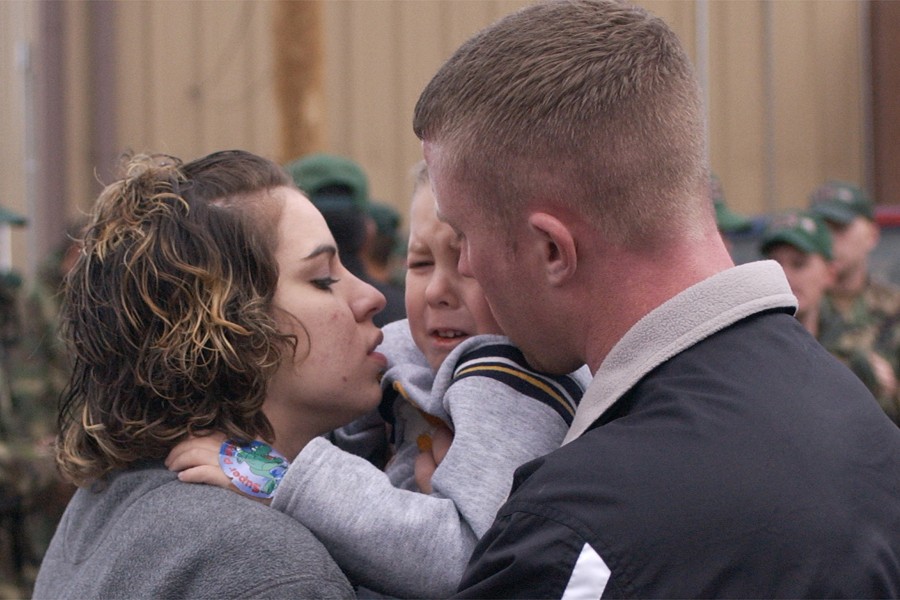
Uncle Sam thanks you

HOLLOMAN AIR FORCE BASE, N.M. (AFPN) -- Airman Michelle Ackerman and Staff Sgt. Mike Morris console Ackerman's 3-year-old son Skylar before Ackerman boards a bus bound for the airport. Ackerman and more than 20 other airmen from the 49th Civil Engineer Squadron here deployed Feb. 13 to support Operation Enduring Freedom.